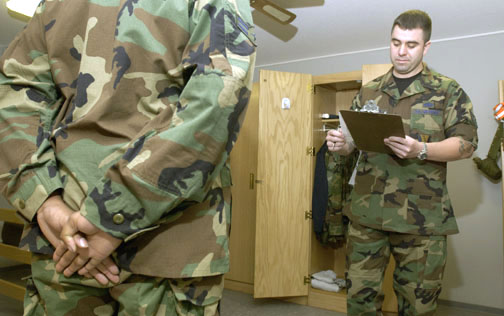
There's no quitting in the Air Force

RAMSTEIN AIR BASE, Germany -- Staff Sgt. Joseph Gallina takes notes while inspecting a Ramstein's Area Motivational Program candidate's room. This 30-day program is used by commanders to